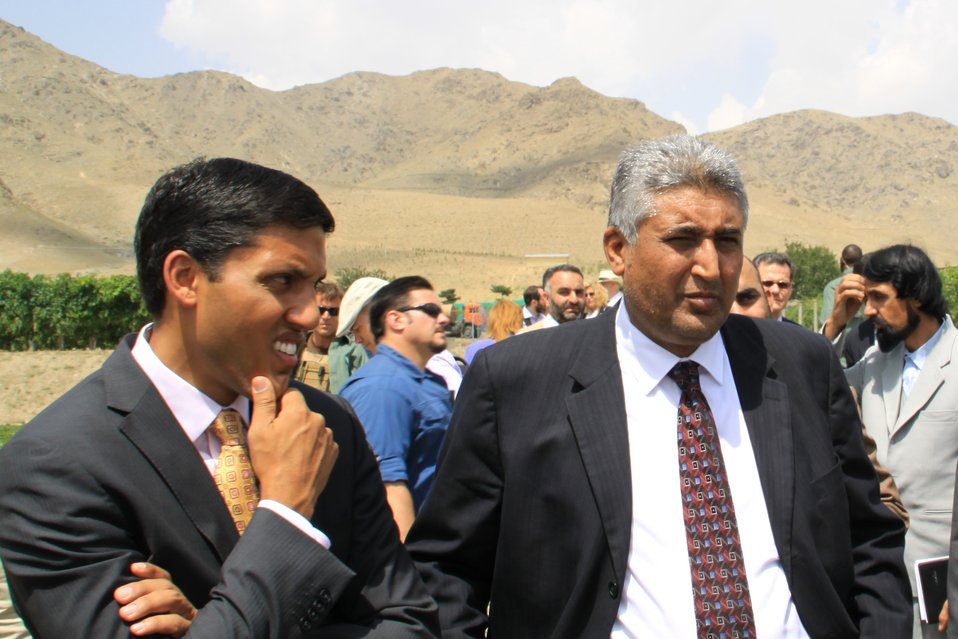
Badam Bagh Farm